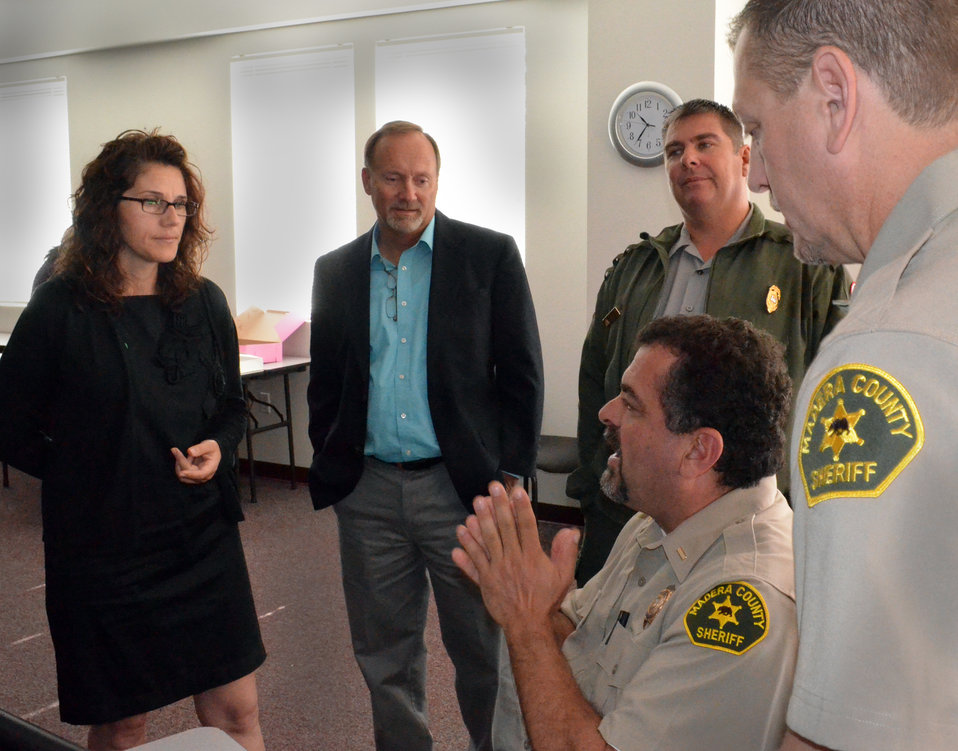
Teams meeting (Tabletop disaster exercise)

Personnel representing numerous disaster response units met in Madera, Calif., Oct. 25, 2012 to talk through the process they would follow in the event of a flood emergency. From left are: U.S. Army Corps of Engineers Sacramento District’s Zeffy Ruvalcaba, emergency action plan program manager; Calvin Foster, southern area operations manager; Phil Smith, park manager for Hensley Lake; and Lt. Mike Salvador (seated); and Lt. Pat Majeski, Madera County Sheriff’s Department.